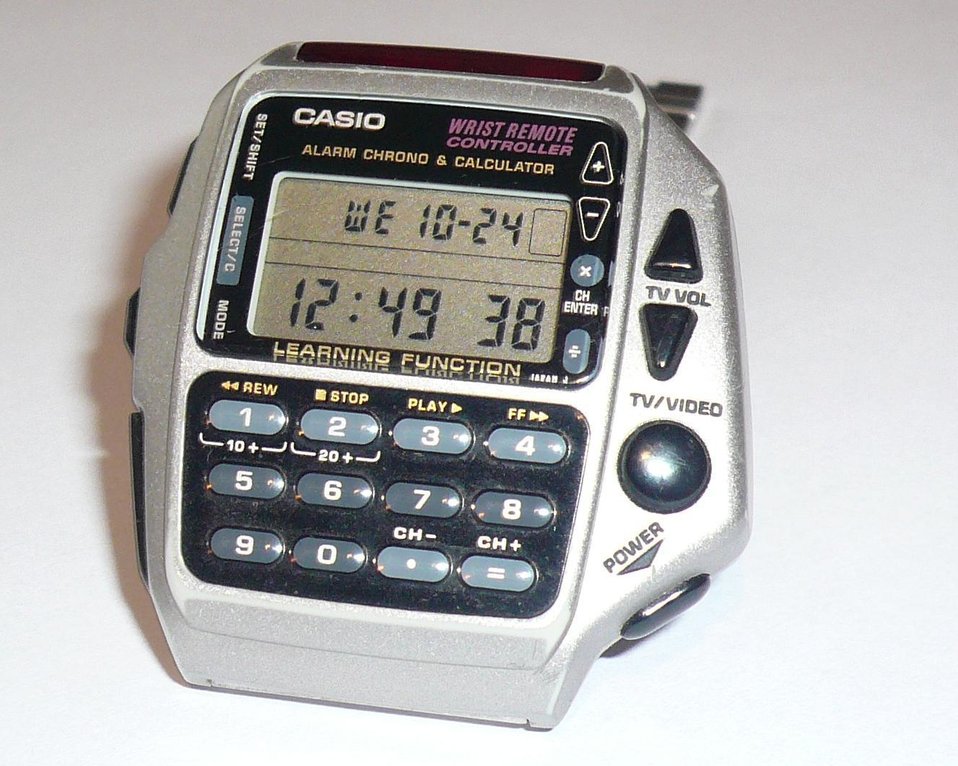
Deutsch: Uhr mit TV- und Videorecorder-Fernbedienung